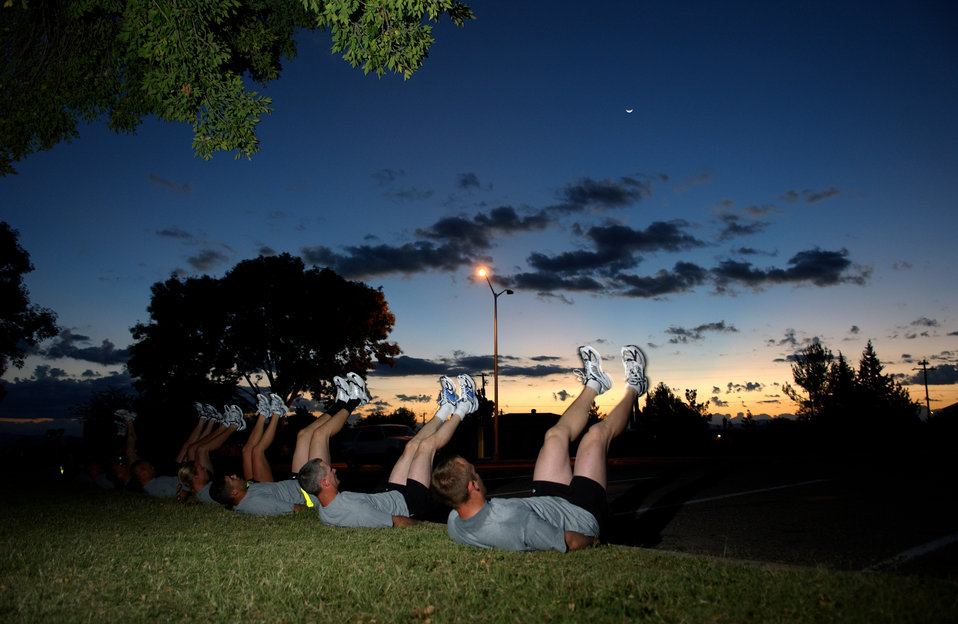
Up before the sun comes out

FORT HUACHUCA, Ariz. -- At early morning physical training, members of U.S. Air Forces in Europe Defender Challenge team perform flutter kicks to start their day Oct. 11. The team is spending three weeks here in preparation for the 2004 Defender Challenge competition. Defender Challenge held at Lackland Air Force Base, Texas, is a security forces competition pitting competitors from major commands against one another over a series of events.